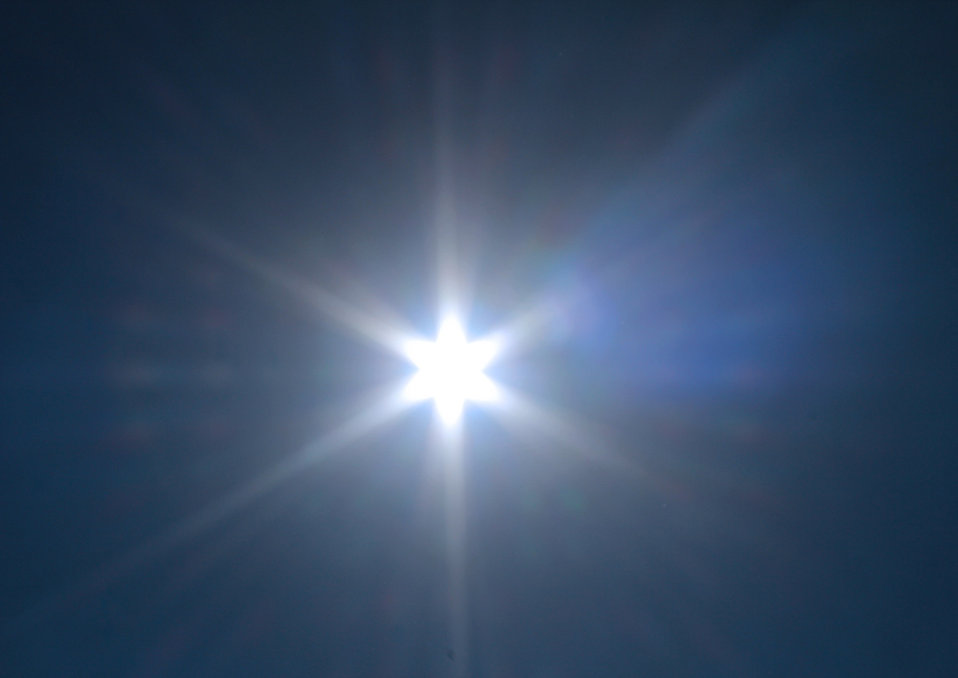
The star sun is a photo where the light rays leading off the sun make it appear to be star shaped..